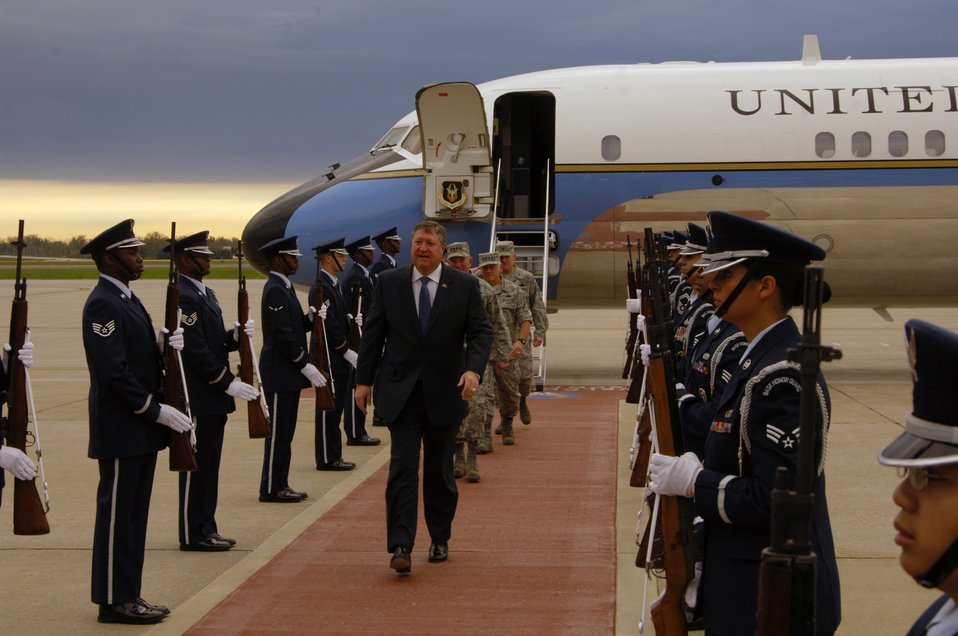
Mobility leaders focused on 'getting back to basics'

Secretary of the Air Force Michael B. Donley arrives at Scott Air Force Base Oct. 23, 2008. During his visit to Scott AFB, Secretary Donley spoke to Air Mobility Command officer and enlisted leaders during AMC Phoenix Rally. The Fall Rally is a three-day, focused look at the command?s priorities, roles and missions.